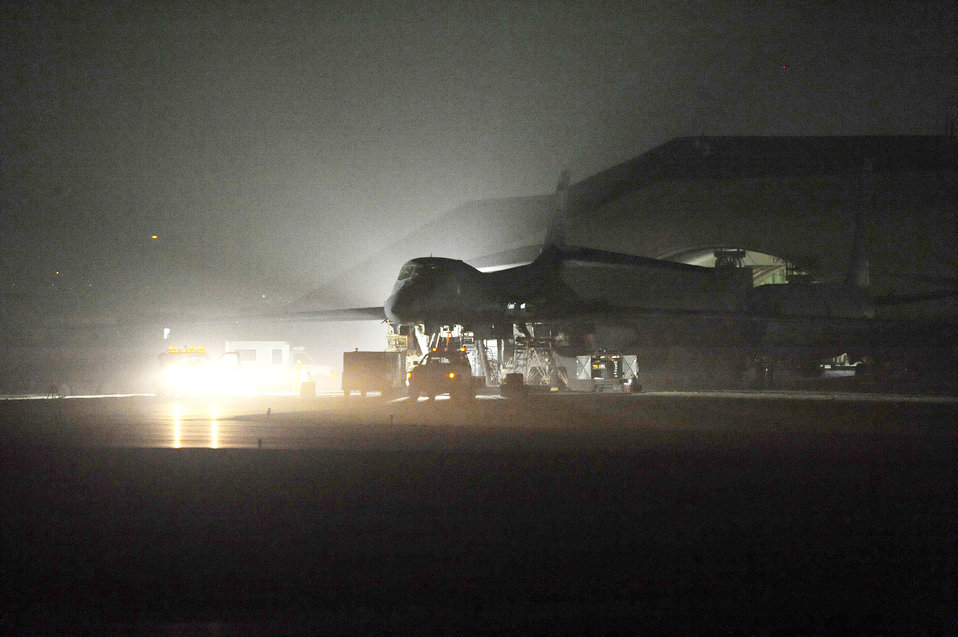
A B-hive of activity

A B-1B Lancer sits on a flightline while receiving maintenance April 5, 2010 at an air base in Southwest Asia. The B-1 can rapidly deliver massive quantities of precision and non-precision weapons against any adversary.